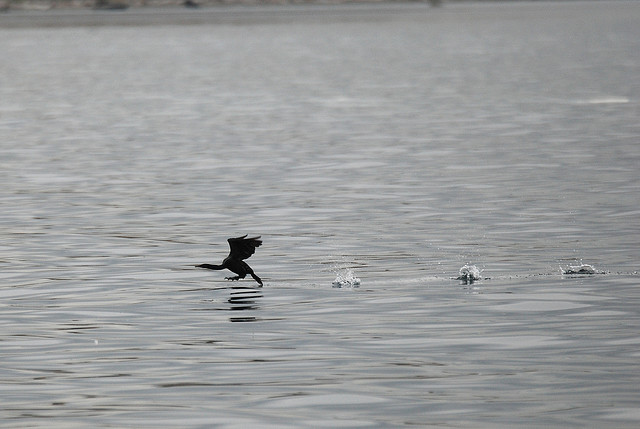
cormorant

Protection Island National Wiildlife Refuge, WA